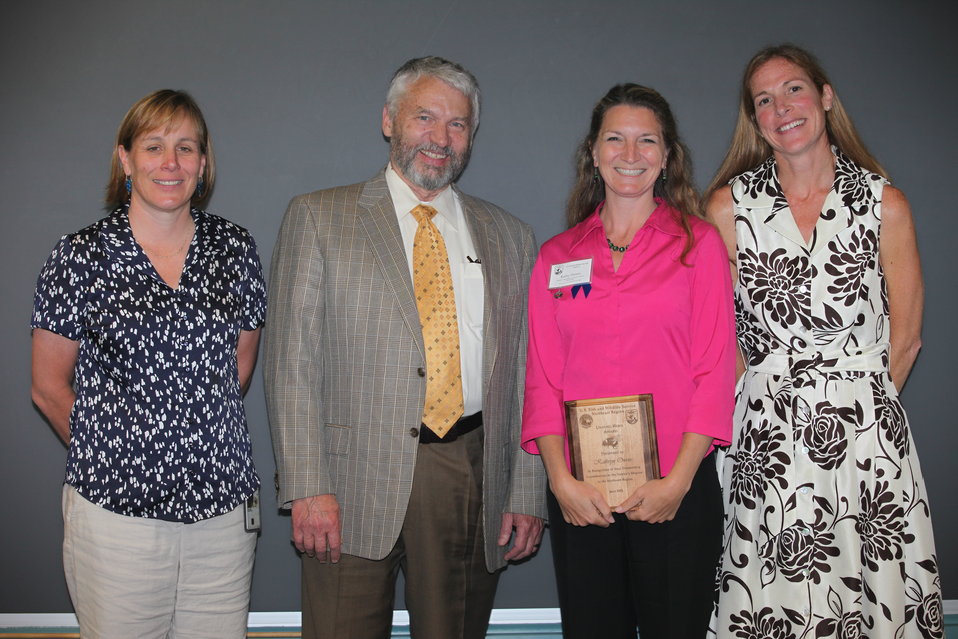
Kathryn Owens of Back Bay National Wildlife Refuge was awarded a Region 5 Unsung Hero Award.
From left to right: Deputy Regional Director Deb Rocque, Deputy Director Rowan Gould, Kathryn Owens and Regional Director Wendi Weber